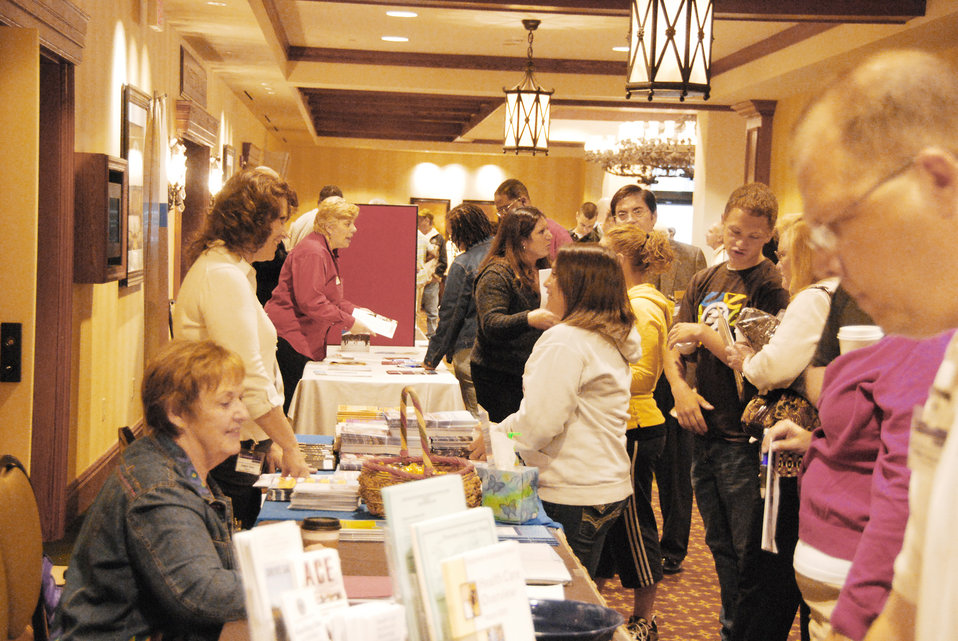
Yellow Ribbon event provides rest, eases redeployment

Participants of the Yellow Ribbon Reintegration event register and peruse the exhibition tables April 16, 2010, at Hershey Lodge in Hershey, Pa. The two-day event provided deployed Airmen resources to help ease their transition home post deployment.